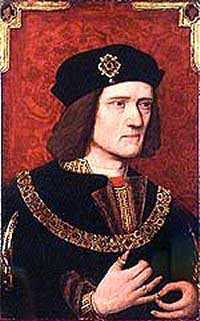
Richiii